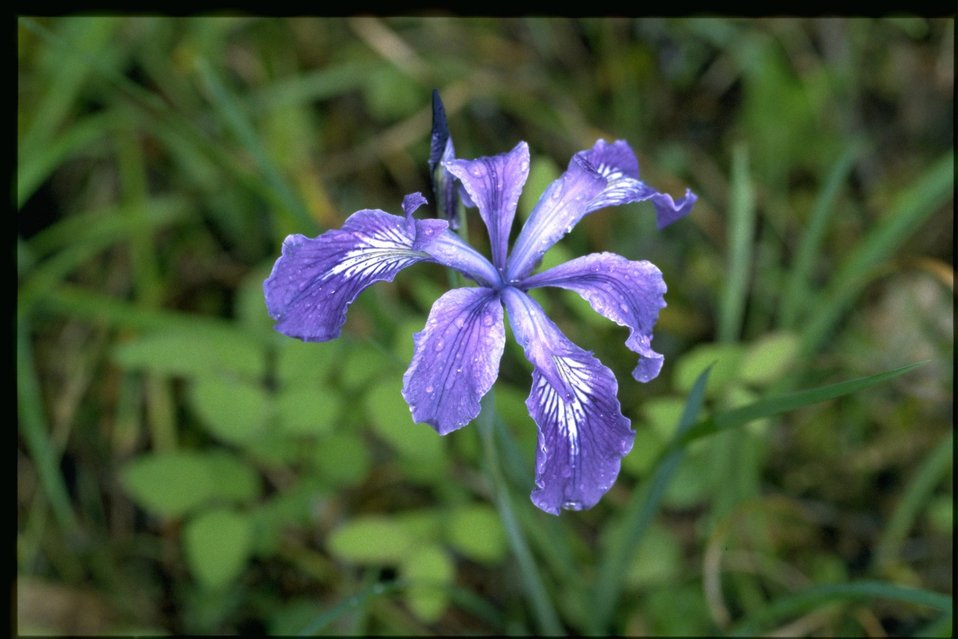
Medium shot of Iris tenax.